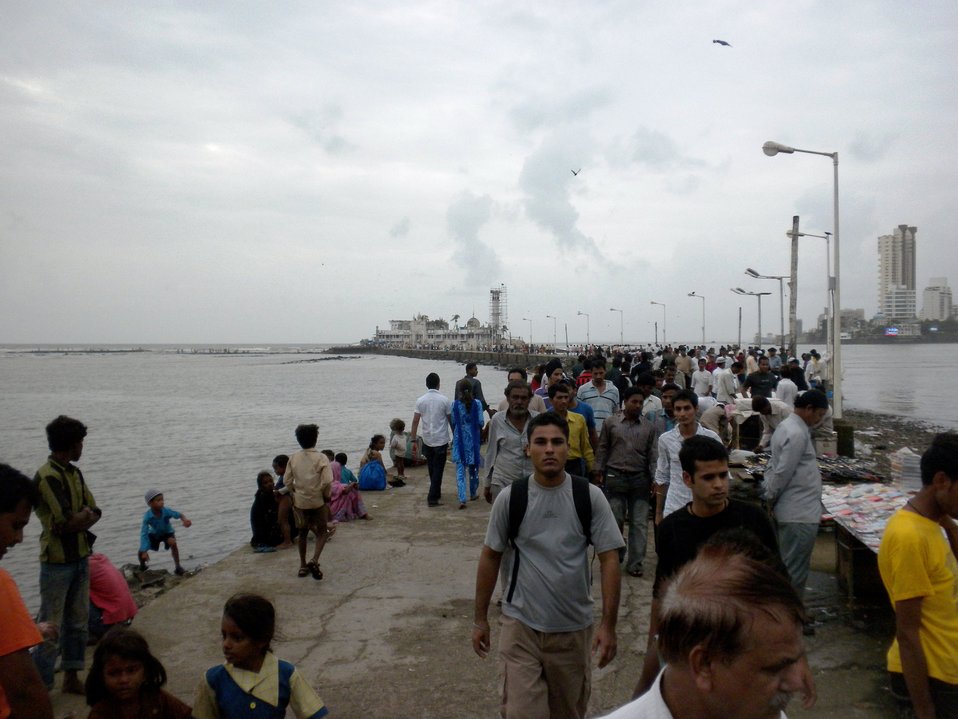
Acting Deputy Assistant Secretary Keshap Shares Photos from India and Nepal

U.S. Acting Deputy Assistant Secretary in the Bureau of South and Central Asian Affairs Atul Keshap shares photos from his August 2010 trip to India and Nepal.